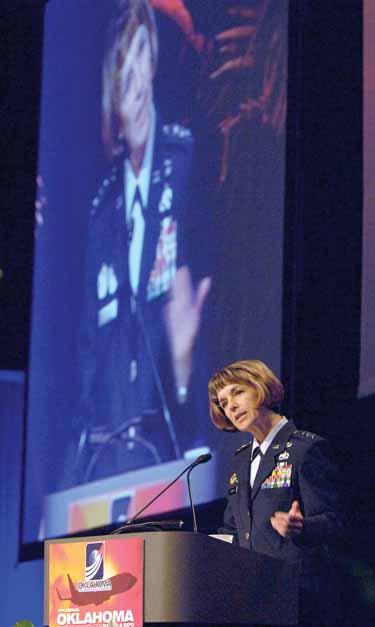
Speakers discuss aging aircraft at summit

Lt. Gen. Terry L. Gabreski speaks during the seventh annual Oklahoma Aerospace Summit and Expo June 23 in Oklahoma City. Co-hosted by Tinker Air Force Base, Okla., the event drew industry and government aviation entities from across the country and attendees from around the world. General Gabreski is the vice commander of Air Force Materiel Command.